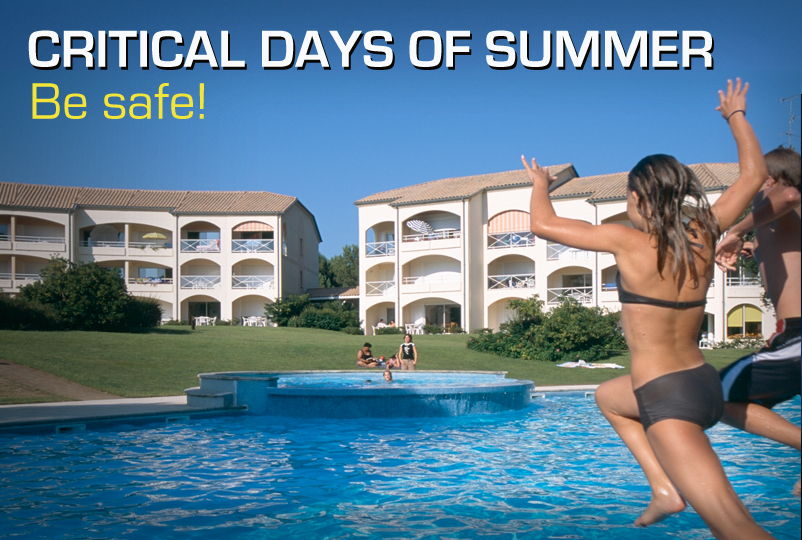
Critical Days of Summer